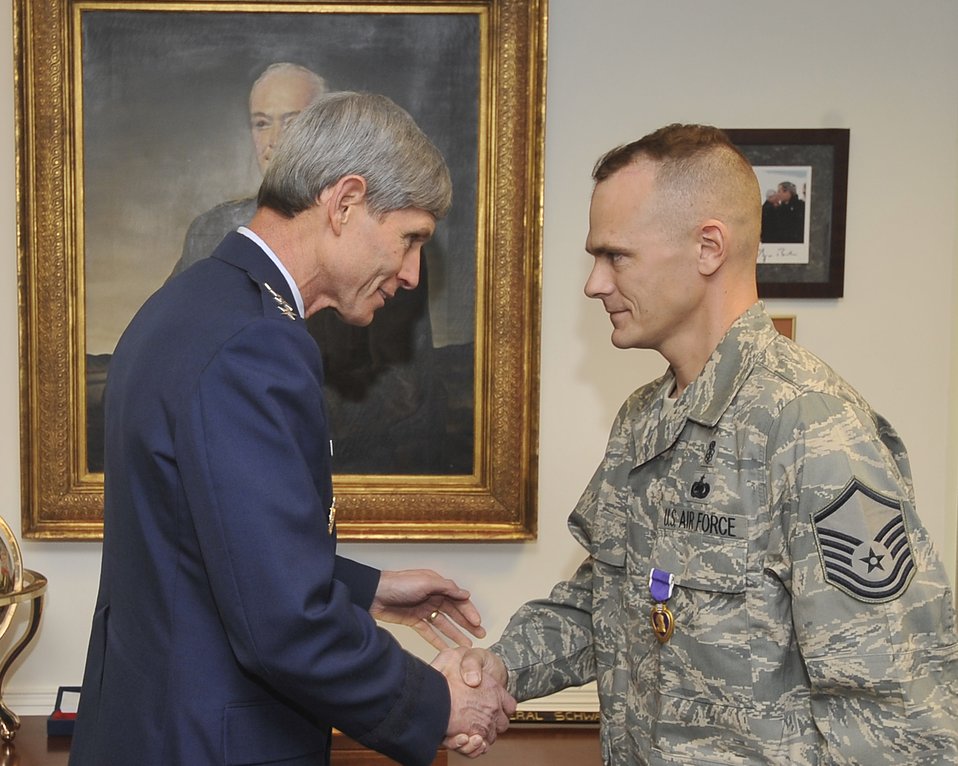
Airman receives Purple Heart

Air Force Chief of Staff Gen. Norton Schwartz congratulates Master Sgt. David Webber Jan. 8 after presenting him the Purple Heart medal in the Pentagon.